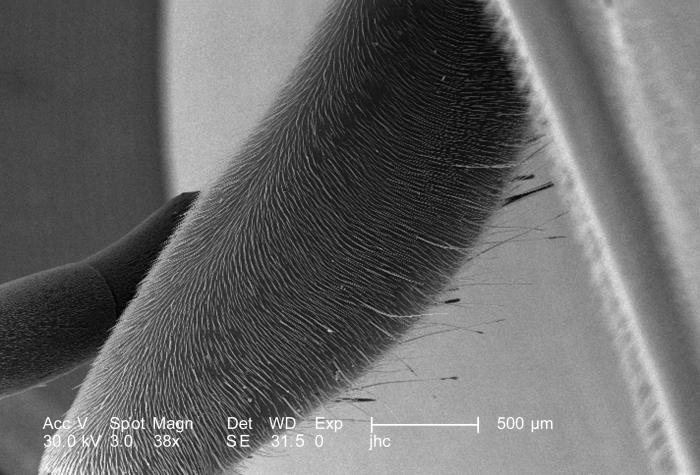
Under a low magnification of only 38X, this scanning electron micrograph (SEM) depicted the exoskeletal appearance of the femur of the first left leg of this unidentified hornet that was discovered in the suburbs of Decatur, Georgia. The insect leg is usually composed of six segments: the proximal 'coxa', which attaches the leg to the thorax, followed distally by the leg's trochanter, femur, tibia, tarsus, and pretarsus, which in some insects is in the form of a 'claw'. This hornet was a member of the Phylum Arthropoda, i.e., Arthro = jointed, and poda = legs, and the class Insecta, for it possessed three pairs of these jointed extremities.